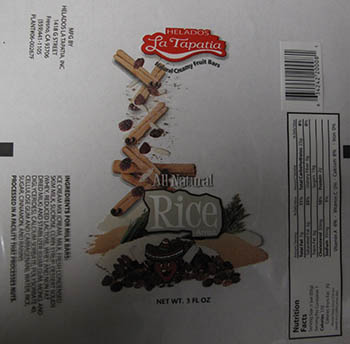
RECALLED – Ice cream products

March 19, 2014 – Product Recall – Helados La Tapatia, Inc. Recalls Products Because of Possible Health Risk.